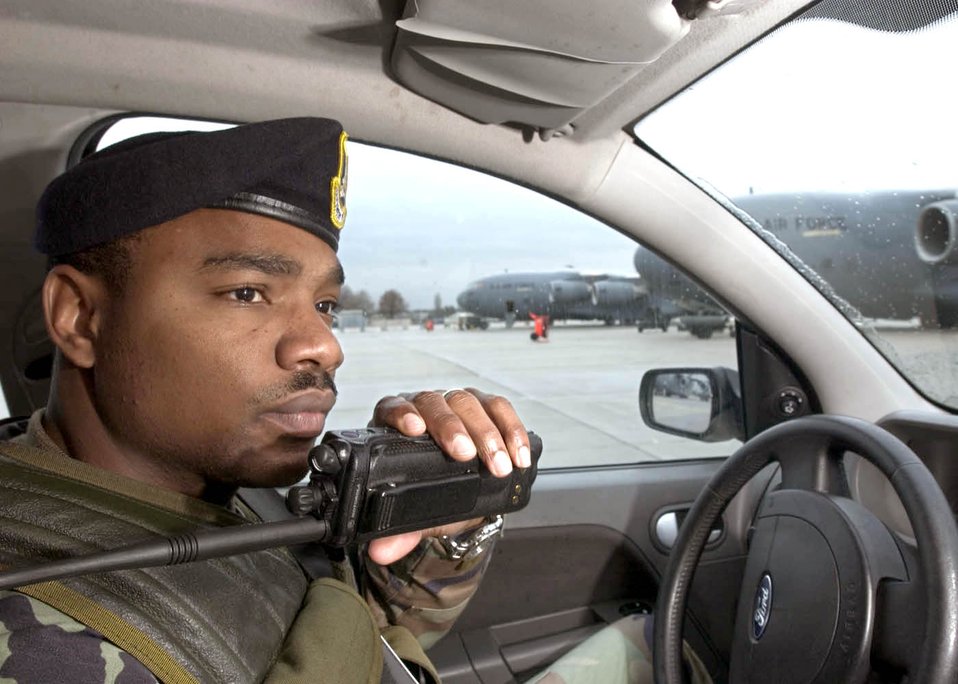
Airmen provide blanket of security

RHEIN-MAIN AIR BASE, Germany -- Staff Sgt. Larry Cleveland calls in his status on the flightline here. Sergeant Cleveland is augmenting the 469th Air Base Group's security forces flight from the 435th Security Force Squadron at nearby Ramstein Air Base.